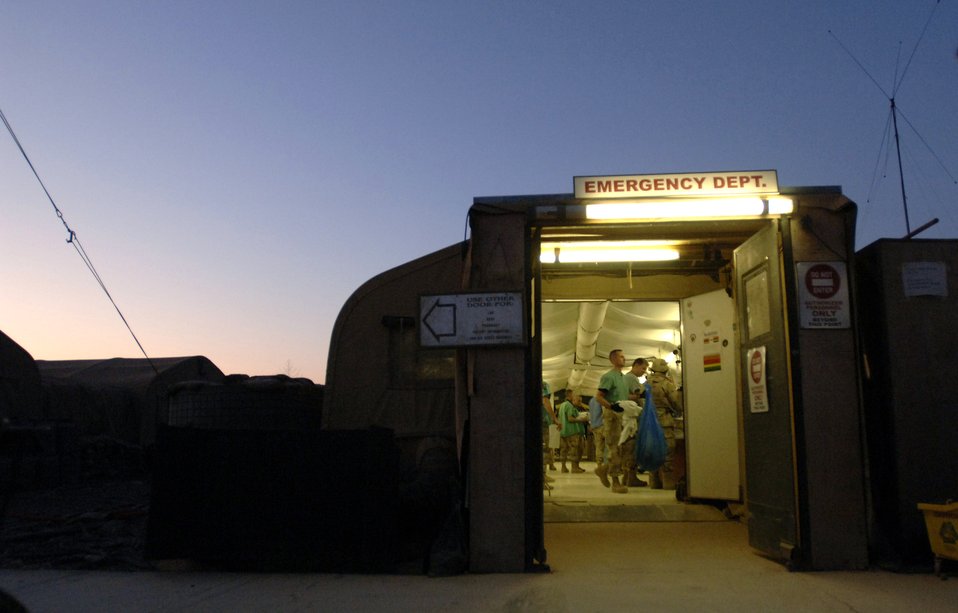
A hospital for heroes

Medics tend to the last patient of the day, Feb. 19 in the emergency room of the Air Force Theater Hospital at Balad Air Base, Iraq. As nightfall approached, 39 patients had been treated at the hospital that day. The medical facility, protected by towering barriers, has a survival rate of 98 percent.